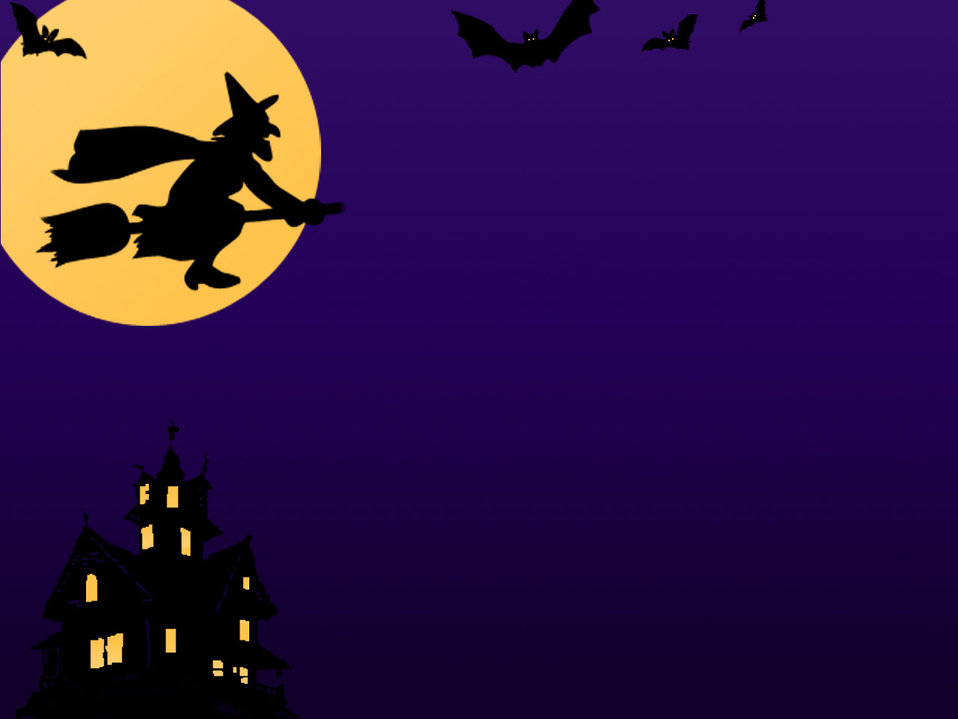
Halloween picture with some typical characters.